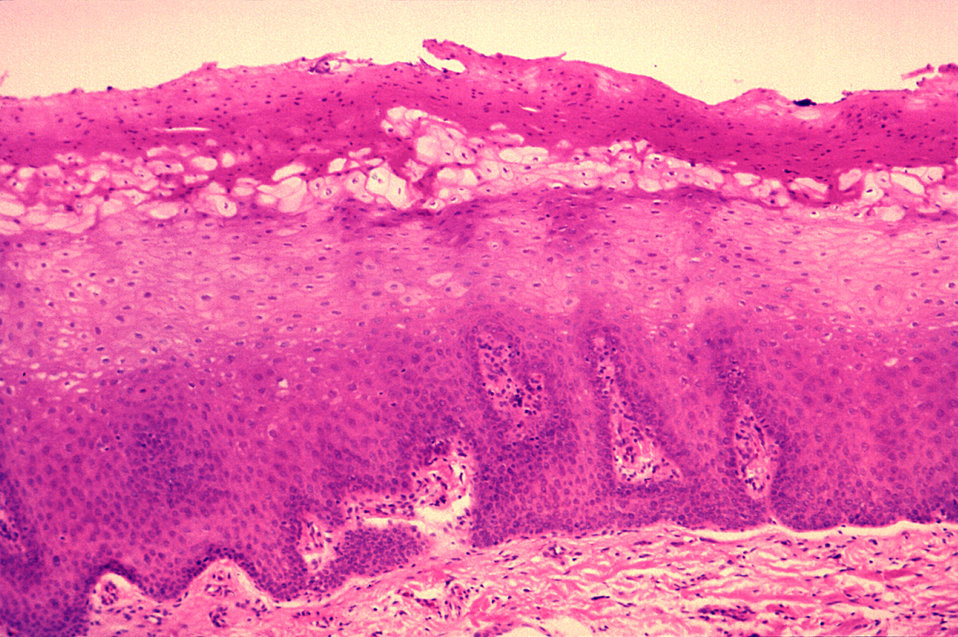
This H&E-stained micrograph reveals the cellular changes seen in an oral hairy leukoplakia (OHL) lesion.